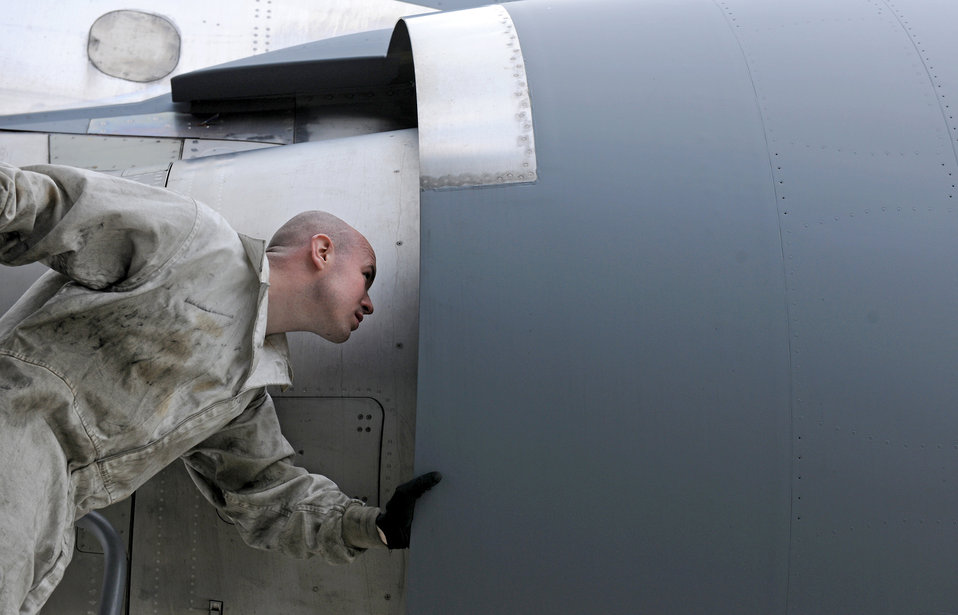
Preflight inspections

Staff Sgt. Sean Durkin inspects a C-17 Globemaster III engine April 12, 2011, at Spangdahlem Air Base, Germany. Sergeant Durkin is an aircraft hydraulics journeyman assigned to the726th Air Mobility Squadron.